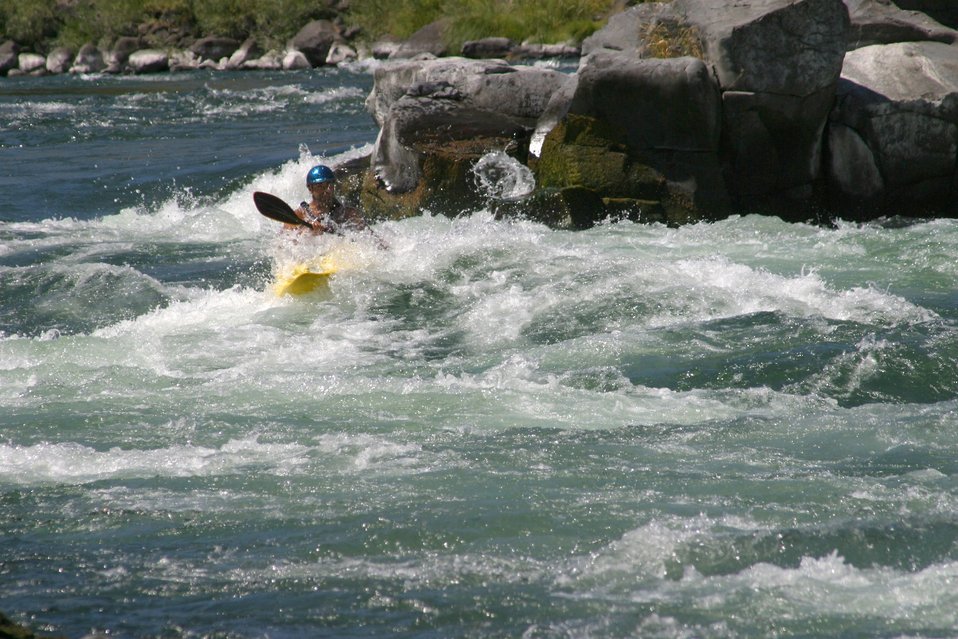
Wapinitia Rapids class III, has large roller coaster waves. 7/26/03 Pelton Dam 3600 cfs: Moody Rapids 4300 cfs.